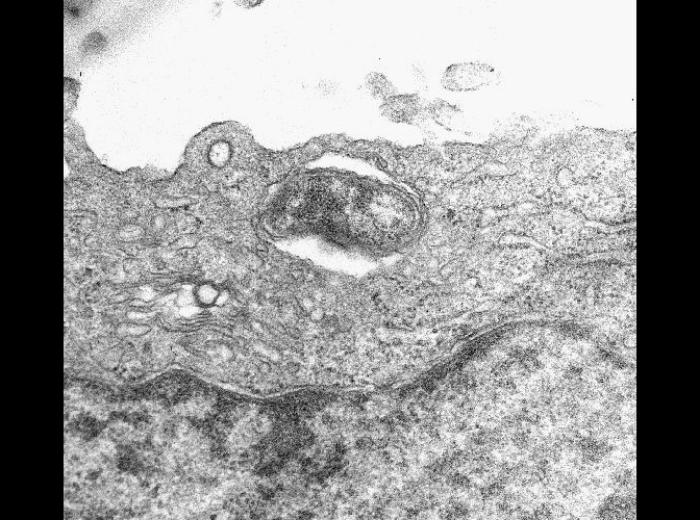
Rickettsia tsutsugamushi within intact phagocytic vacuole of mouse peritoneal mesothelial cell.